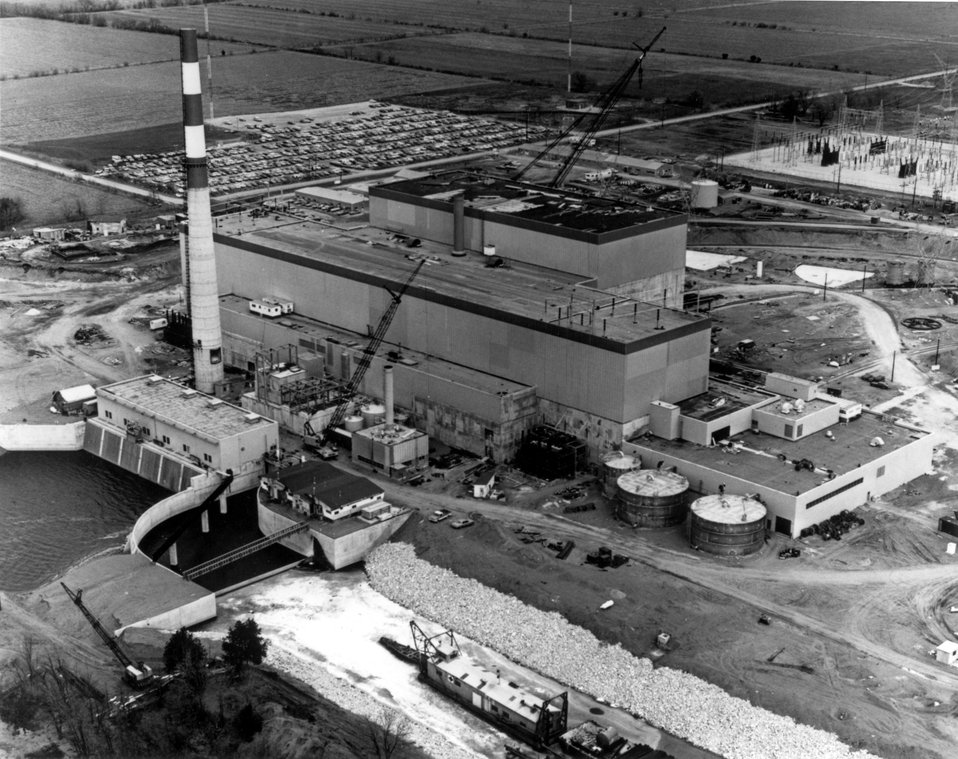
Quad-Cities station units 1 and 2 are located near Cordova, Illinois.